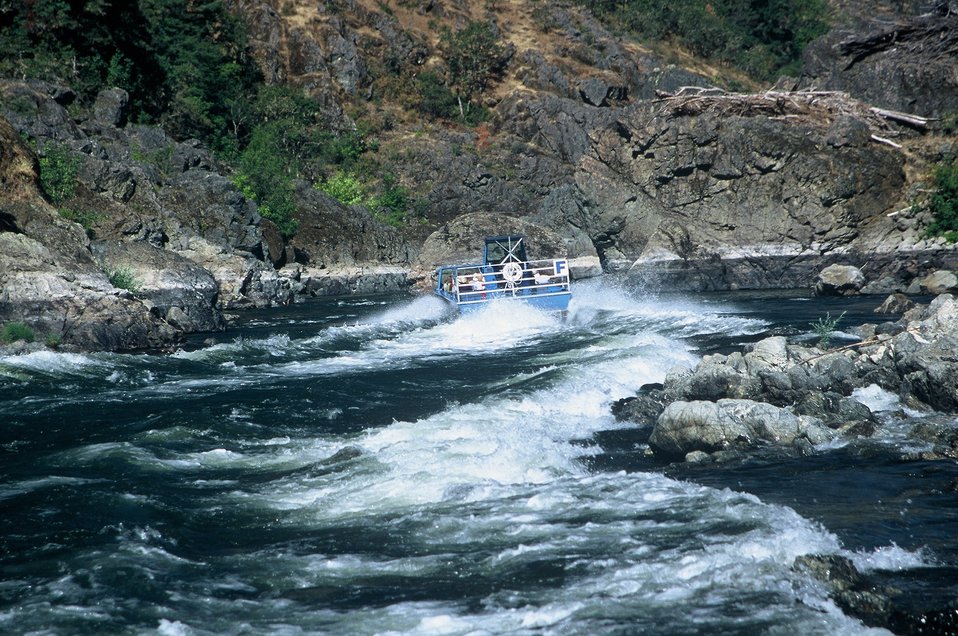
Jet boat at the entrance to Hellgate Canyon